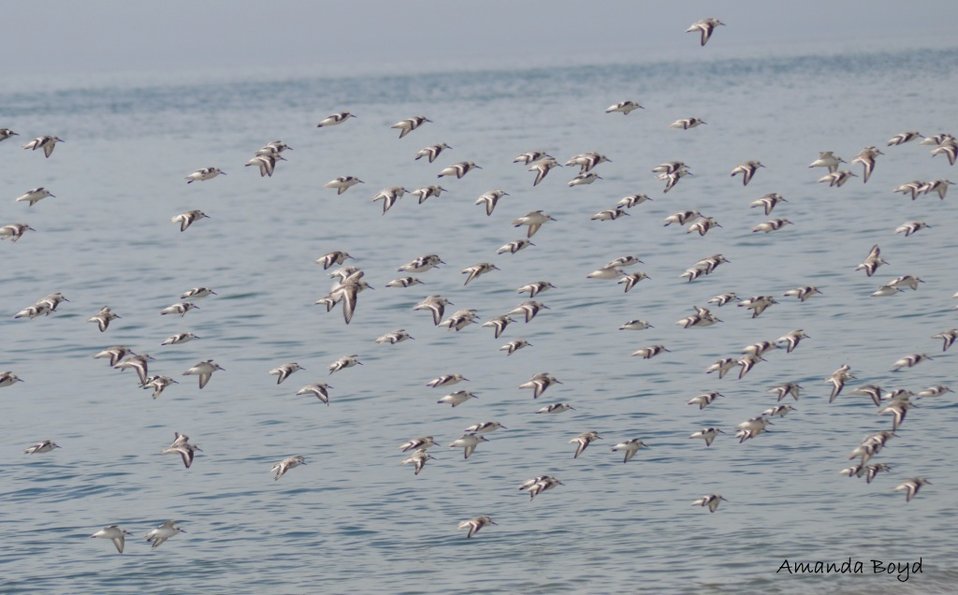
sanderlings in flight

Nantucket National Wildlife Refuge